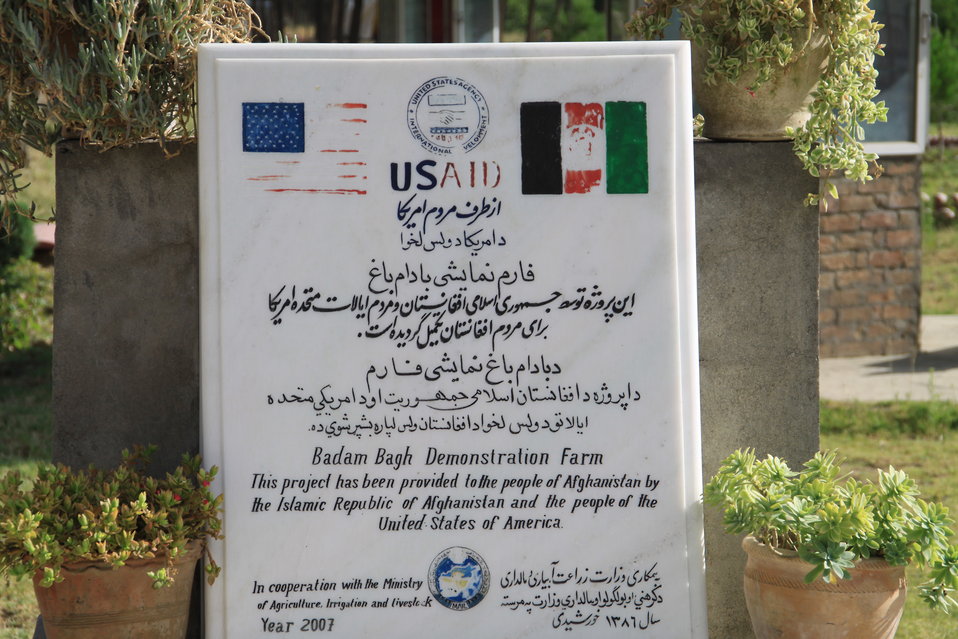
Badam Bagh Farm